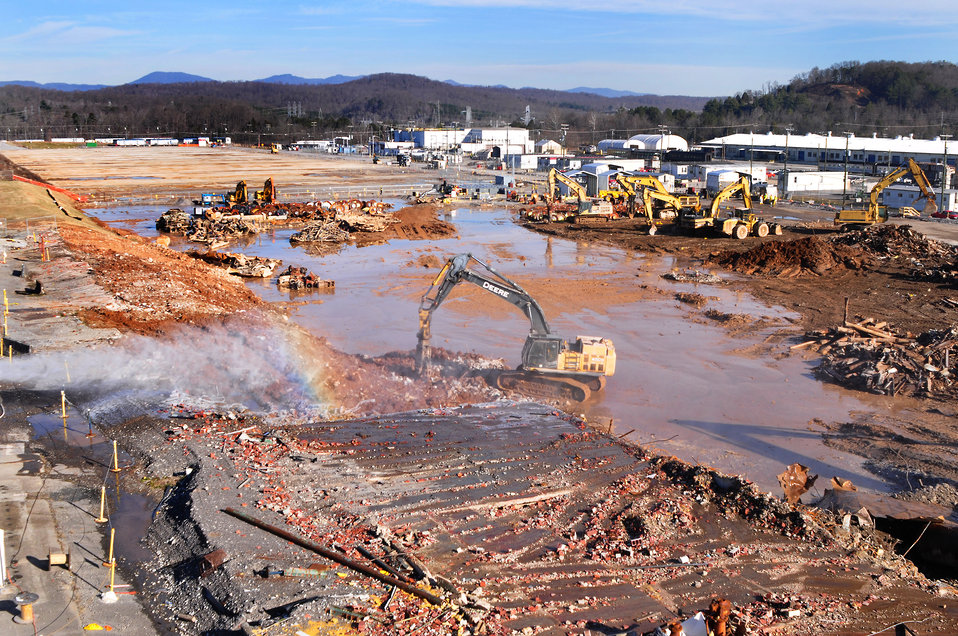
Last Part of K-25 Coming Down Oak Ridge 2013

13-157-1 DOE photo Lynn Freeny 12-19-2013 Oak Ridge Tennessee